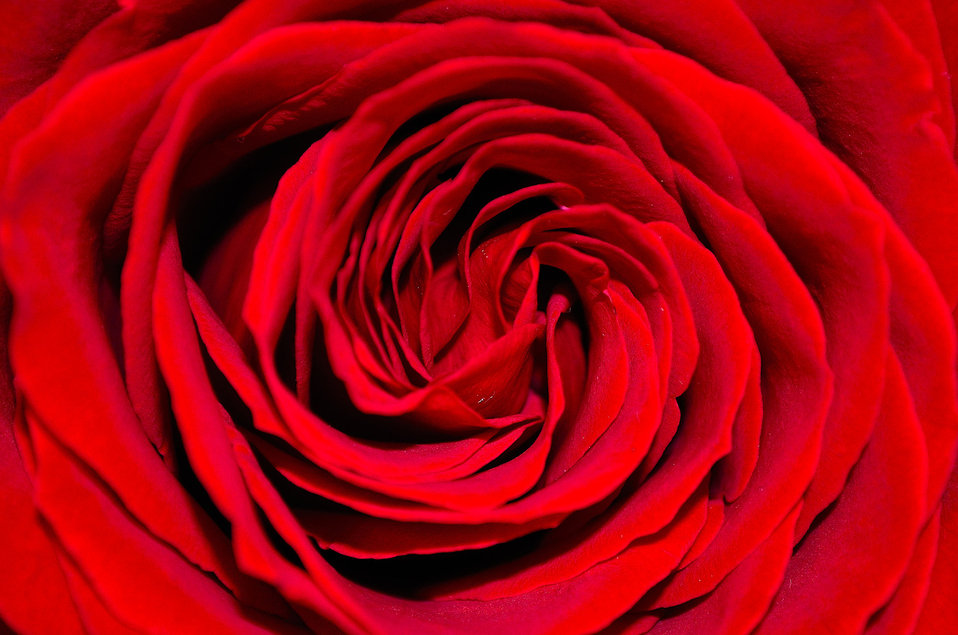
Red rose - background.